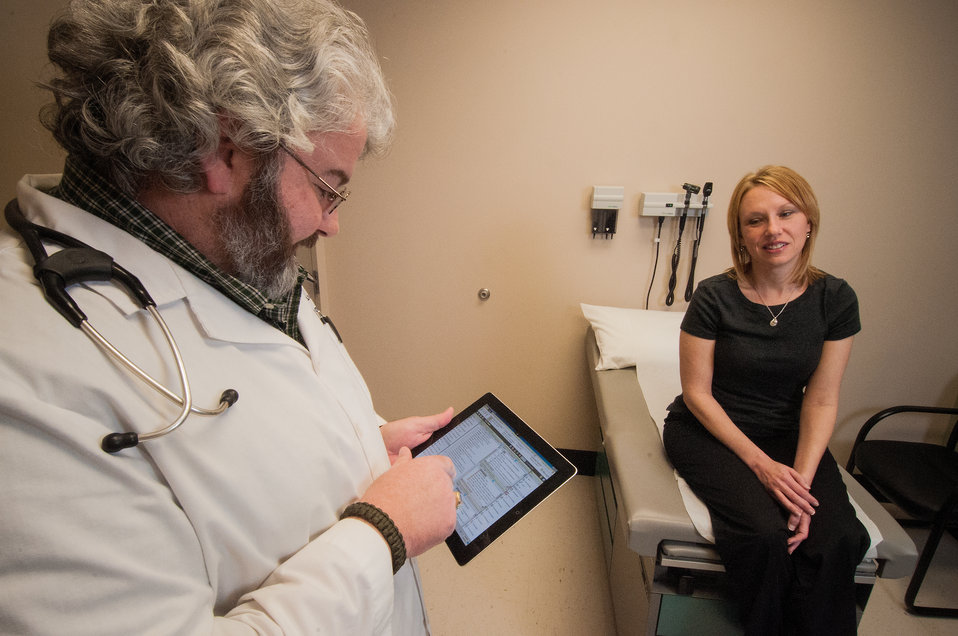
R.J. Taylor Memorial Hospital, Inc. Family Medicine Physician Dr. Albert Warren, MD consults with a patient and records the patient’s symptoms on an electronic tablet in Hawkinsville, GA on Mar. 6, 2013. The hospital is a licensed private, not-for-profit acute care facility providing emergency, specialty and primary health care in a rural area of Georgia that has a high percentage of people living below the state average poverty level and considered most economically distressed. The hospital has purchased an Electronic Medical Records System under an incentive program by the Federal government through the U.S. Department of Agriculture (USDA) Rural Development (RD) Community Facilities Loan (CF) that ensures fiscally responsive access to superior quality integrated health care.